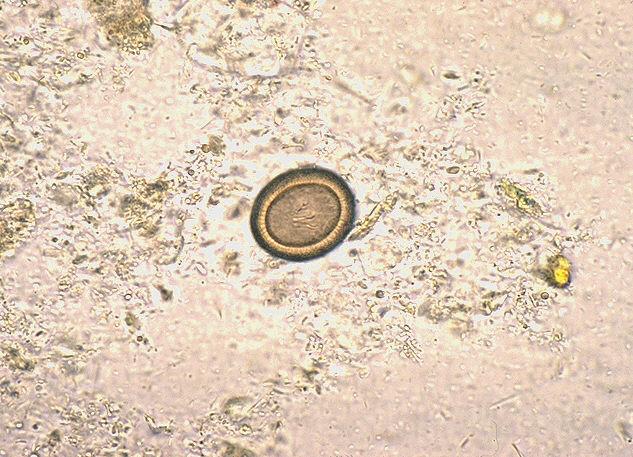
Taenia sp. egg.